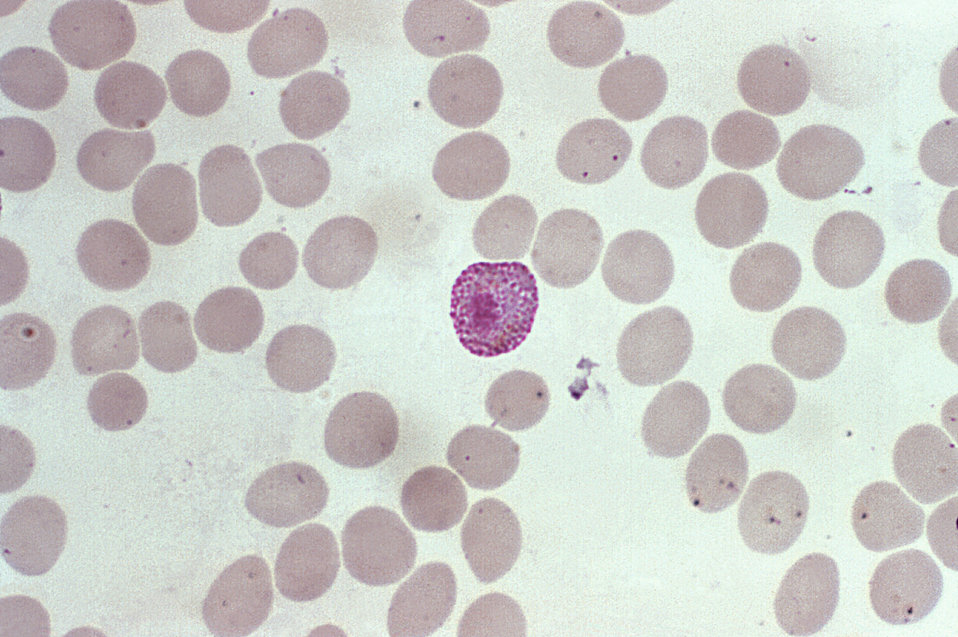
This photomicrograph of a blood smear contains a microgametocyte of the parasite Plasmodium vivax.